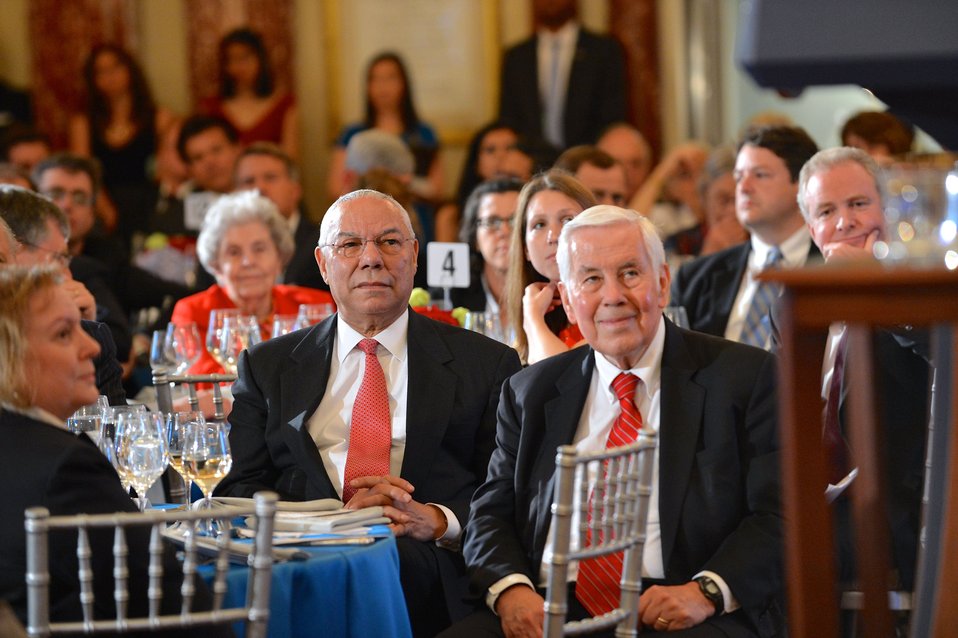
Former Secretary Powell and Former Secretary Lugar Listen to Secretary Kerry's Remarks at Celebration of 90th Anniversary of the U.S. Foreign Service

Former Secretary of State Colin Powell and former Senator Richard Lugar listen as U.S. Secretary of State John Kerry delivers remarks at an event celebrating the 90th Anniversary of the United States Foreign Service at the U.S. Department of State in Washington, D.C., on May 22, 2014. The modern Foreign Service was created on May 24, 1924, with the passage of the Rogers Act establishing the current merit-based, professional Foreign Service.